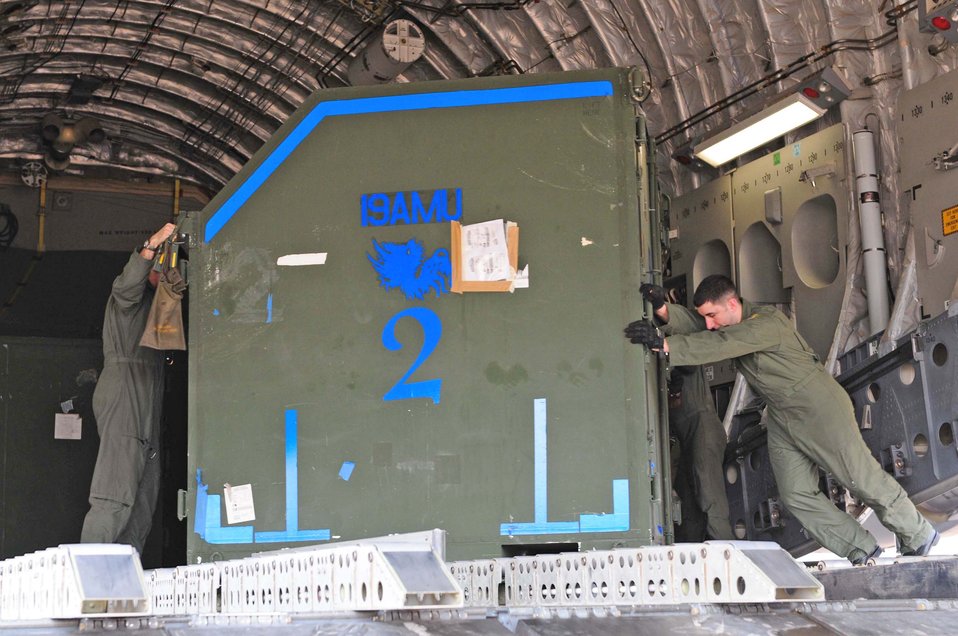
Airmen arrive in Thailand for Cope Tiger 2010

Senior Airman David Russell (right) removes cargo from a C-17 Globemaster III for Exercise Cope Tiger 2010 Feb. 28, 2010, at Udon Thani Royal Thai Air Force Base, Thailand. Cope Tiger is an annual multilateral exercise involving the United States, Thailand and Singapore. Airman Russell is deployed to Udon Thani from Elmendorf Air Force Base, Alaska.